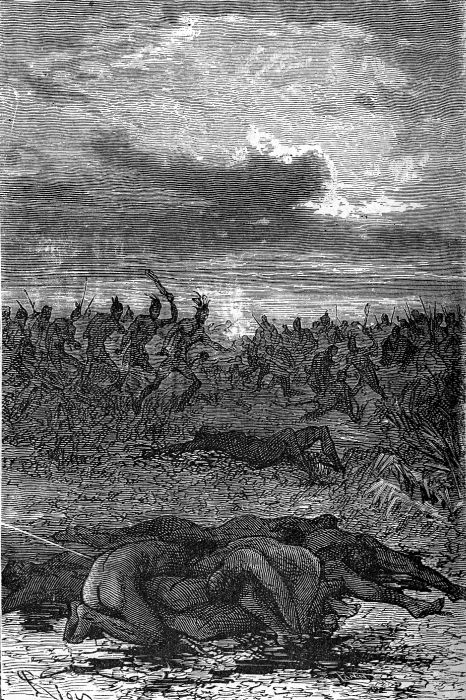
An ilustration from the novel 'In Search of the Castaways; or Captain Grant's Children' by Jules Verne drawn by Édouard Riou. Polski: Ilustracja powieści Juliusza Verne'a 'Dzieci kapitana Granta' autorstwa Édouarda Riou. Français : 'Les Enfants du capitaine Grant', Édouard Riou. Français : Ce fut le signal d’une épouvantable scène de cannibalisme.